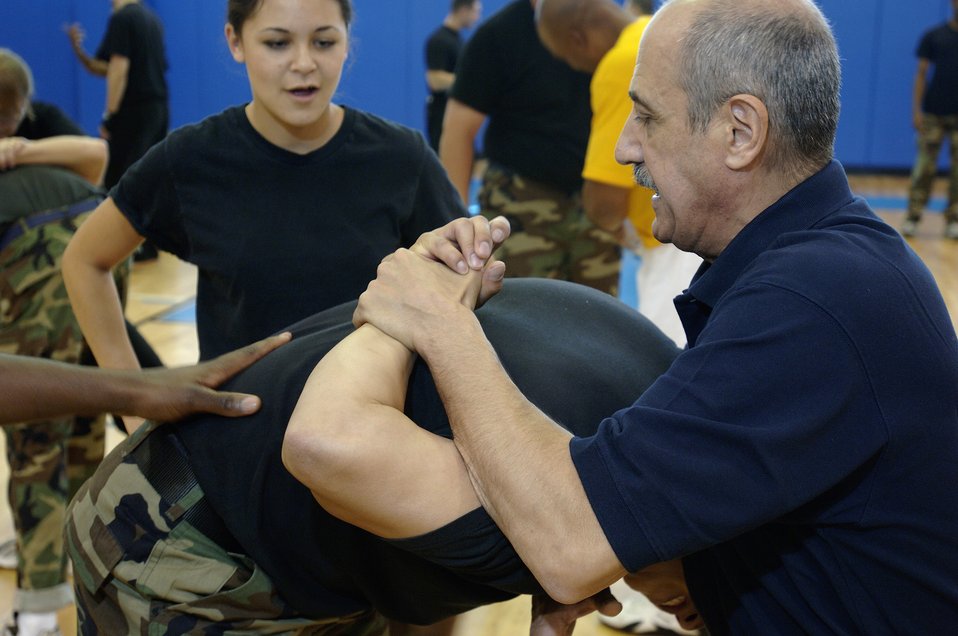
Specialized training

LANGLEY AIR FORCE BASE, Va. (AFPN) -- Master Sgt. John Pellegrini demonstrates proper hapkido hand trapping techniques to Airman Kaitlin Massey. Sergeant Pellegrin a grand master in combat hapkido, teaches the class to improve combat readiness for deploying Airman. Airman Massey is assigned to the 36th Intellligence Squadron.